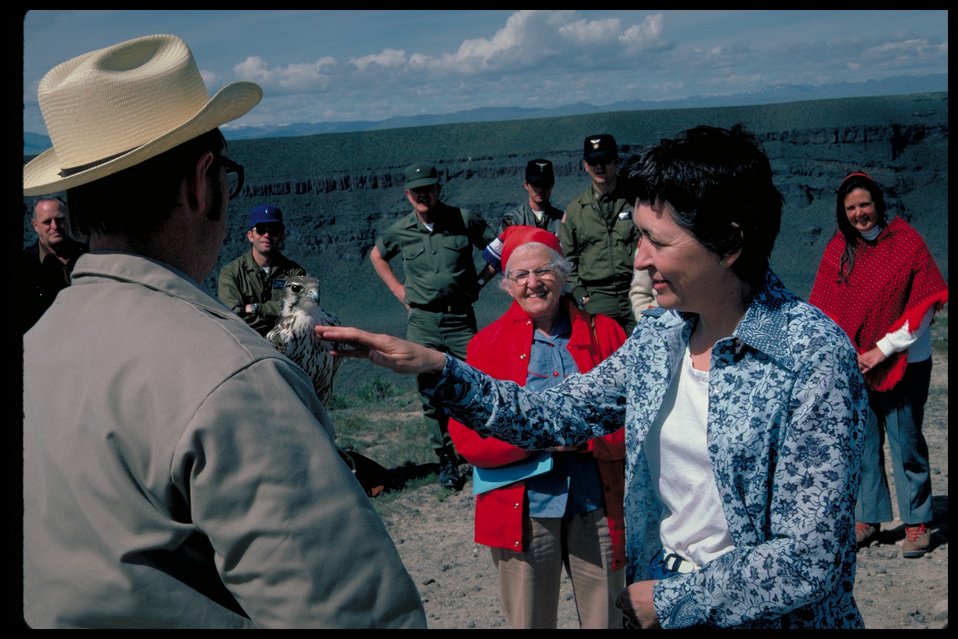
Prarie Falcon Birds of Prey National Conservation Area BOP Owyhee Field Office LSRD Lower Snake River District